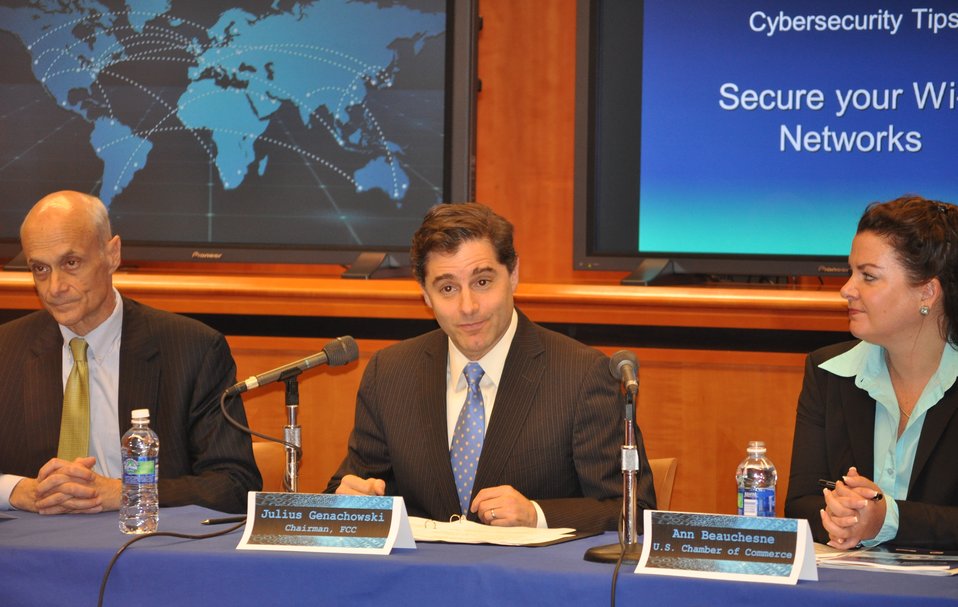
Cybersecurity 5-16

Cybersecurity for Small Business Roundtable; May 16, 2011